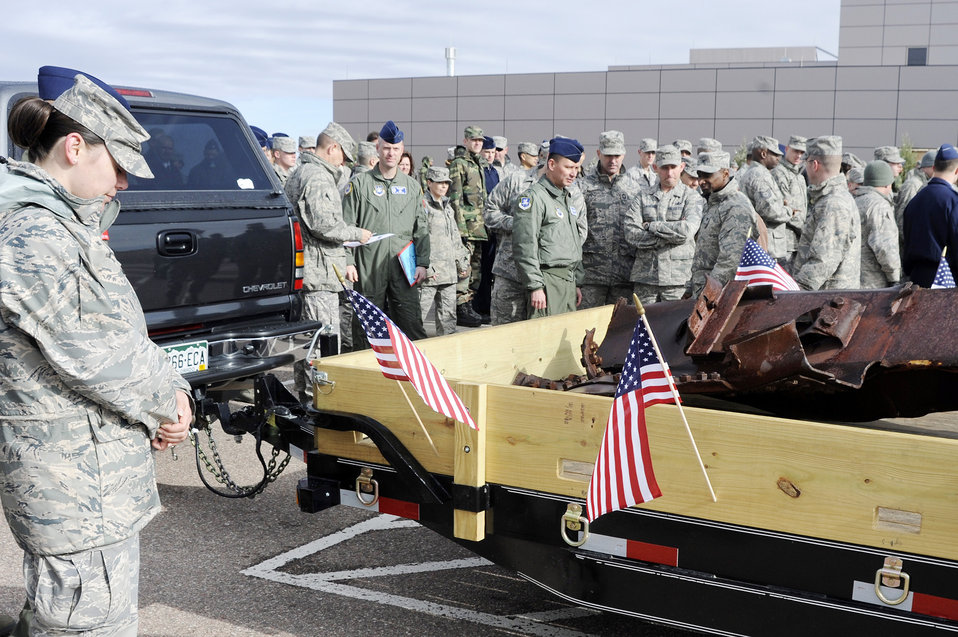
Future memorial for Schriever

A Schriever Air Force Base, Colo., Airmen pays her respects April 26, 2010. The beam was salvaged from the World Trade Center and delivered to the base to become part of a memorial commemorating the event of Sept. 11, 2010.